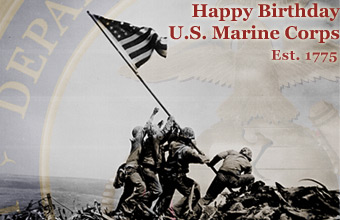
Marine Corps Birthday

The U.S. Marine Corps celebrates its 231st birthday, Nov. 10, 2006.